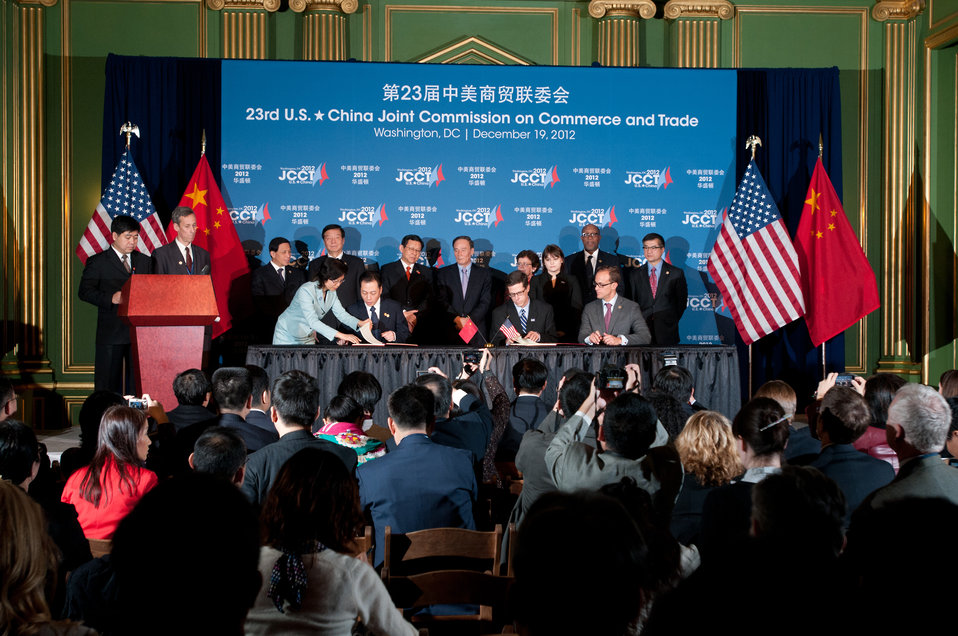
Chinese Ministry of Commerce Vice Minister Wang Chao, U.S. Acting Under Secretary of Commerce Mr. Mark Doms, and Deputy U.S. Trade Representative Ambassador Demetrios Marantis sign The Second Phase Report on the Statistical Discrepancy of Merchandise Trade between the U.S. and China, with the support the principal leaders from the Chinese delegates and U.S. hosts, (L to R) China’s Ambassador to the U.S. Zhang Yesui, Vice Minister of Industry and Information Technology Liu Lihua, Chinese Minister of Commerce Chen Deming, Chinese Vice Premier Wang Qishan, Acting U. S. Commerce Secretary Rebecca Blank, U.S. Trade Representative Ron Kirk and U.S. Ambassador to China Gary Locke at the 23rd Session of the U.S. China Joint Commission on Commerce and Trade (JCCT) at the Andrew W. Mellon Auditorium in Washington, D.C. on Wednesday, Dec. 19, 2012. The JCCT holds high-level plenary meetings on an annual basis to review progress made by working groups that focus on a wide variety of trade issues. These working groups meet throughout the year to address topics such as intellectual property rights, agriculture, pharmaceuticals and medical devices, information technology, tourism, commercial law, environment, and statistics.